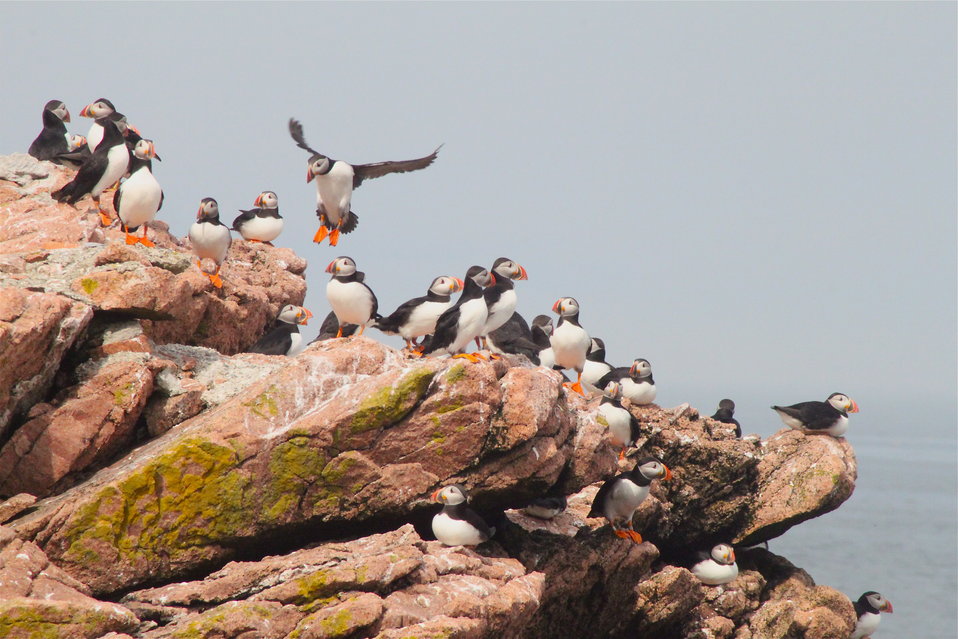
Puffin Landing